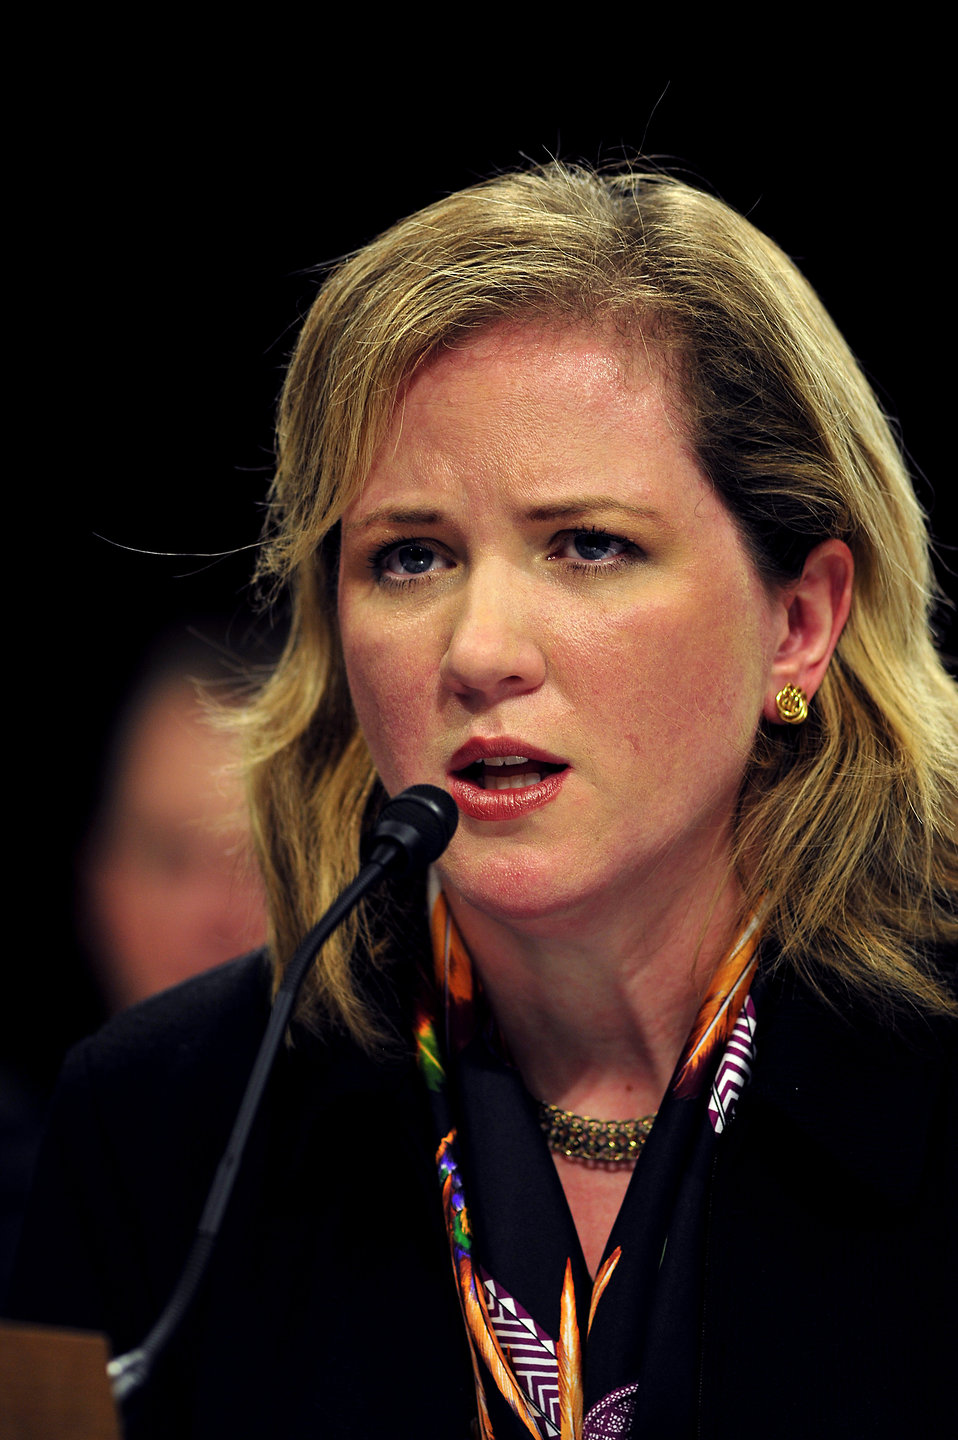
Air Force undersecretary nominee testifies

Erin Conaton, nominee for undersecretary of the Air Force, answers a question during a Senate Committee on Armed Services hearing Nov. 19, 2009, on Capitol Hill. Ms. Conaton holds a Master of Arts in Law and Diplomacy from the Fletcher School of Law and Diplomacy at Tufts University and earned her Bachelor of Science in Foreign Service from the School of Foreign Service at Georgetown University.